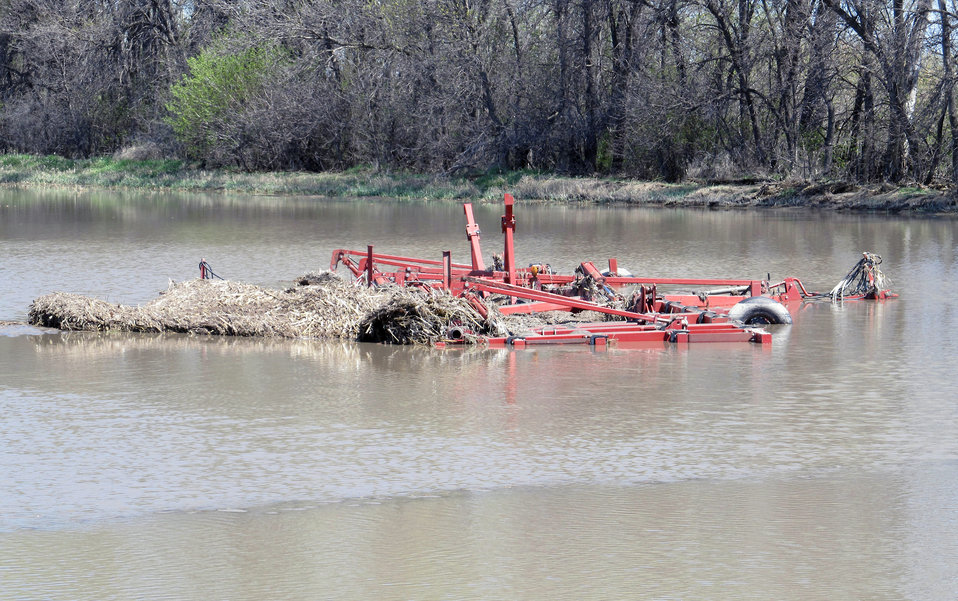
Flooding and water damage in the Park and Tongue River Watersheds located in Cavalier, Pembina and Cavalier Counties in North Dakota on Thursday, May 23, 2013.